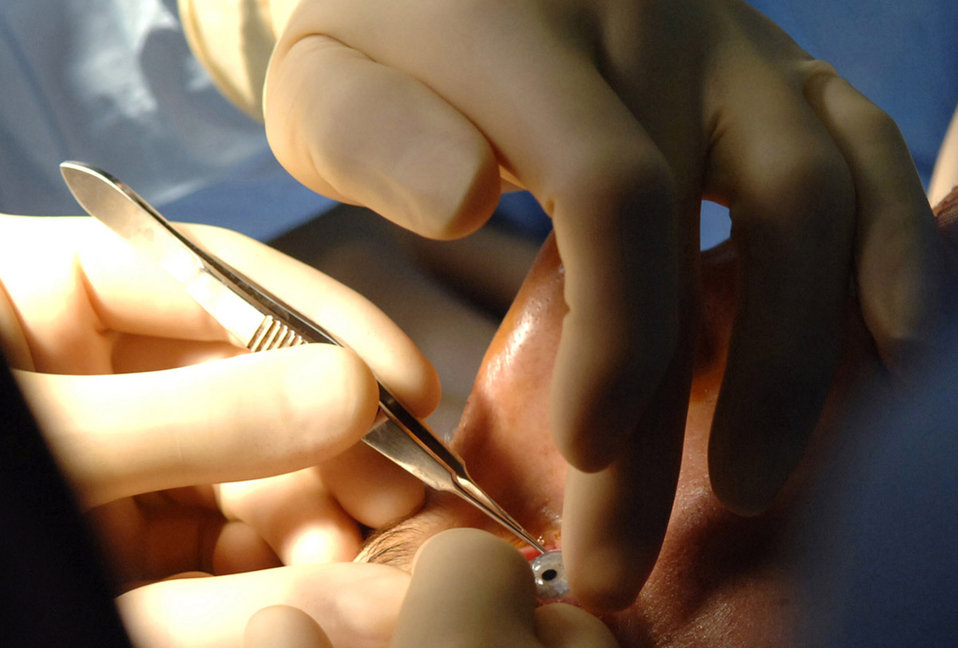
Precise care

At Joint Base Balad, Iraq, an ophthalmologist operates July 10 on a trauma patient who sustained extensive eye injuries in an Iraqi combat operation. Ophthalmologists assigned to the Air Force Theater Hospital see twice as many eye traumas than they do at their home stations.